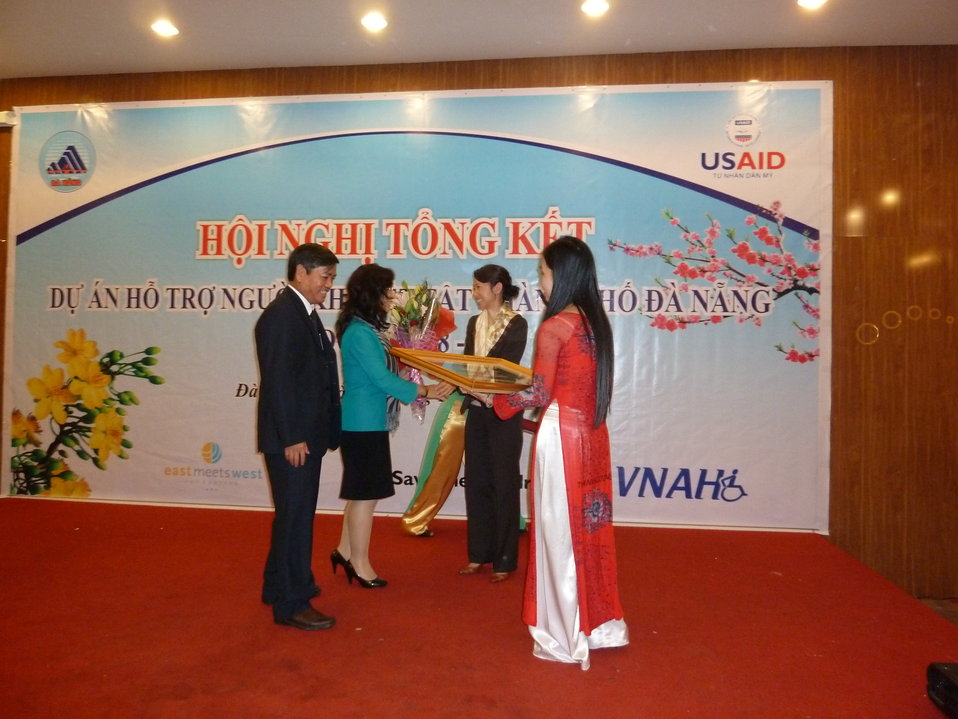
Danang Disability Workshop

Close out workshop of three-year USAID program in disabilities, Danang